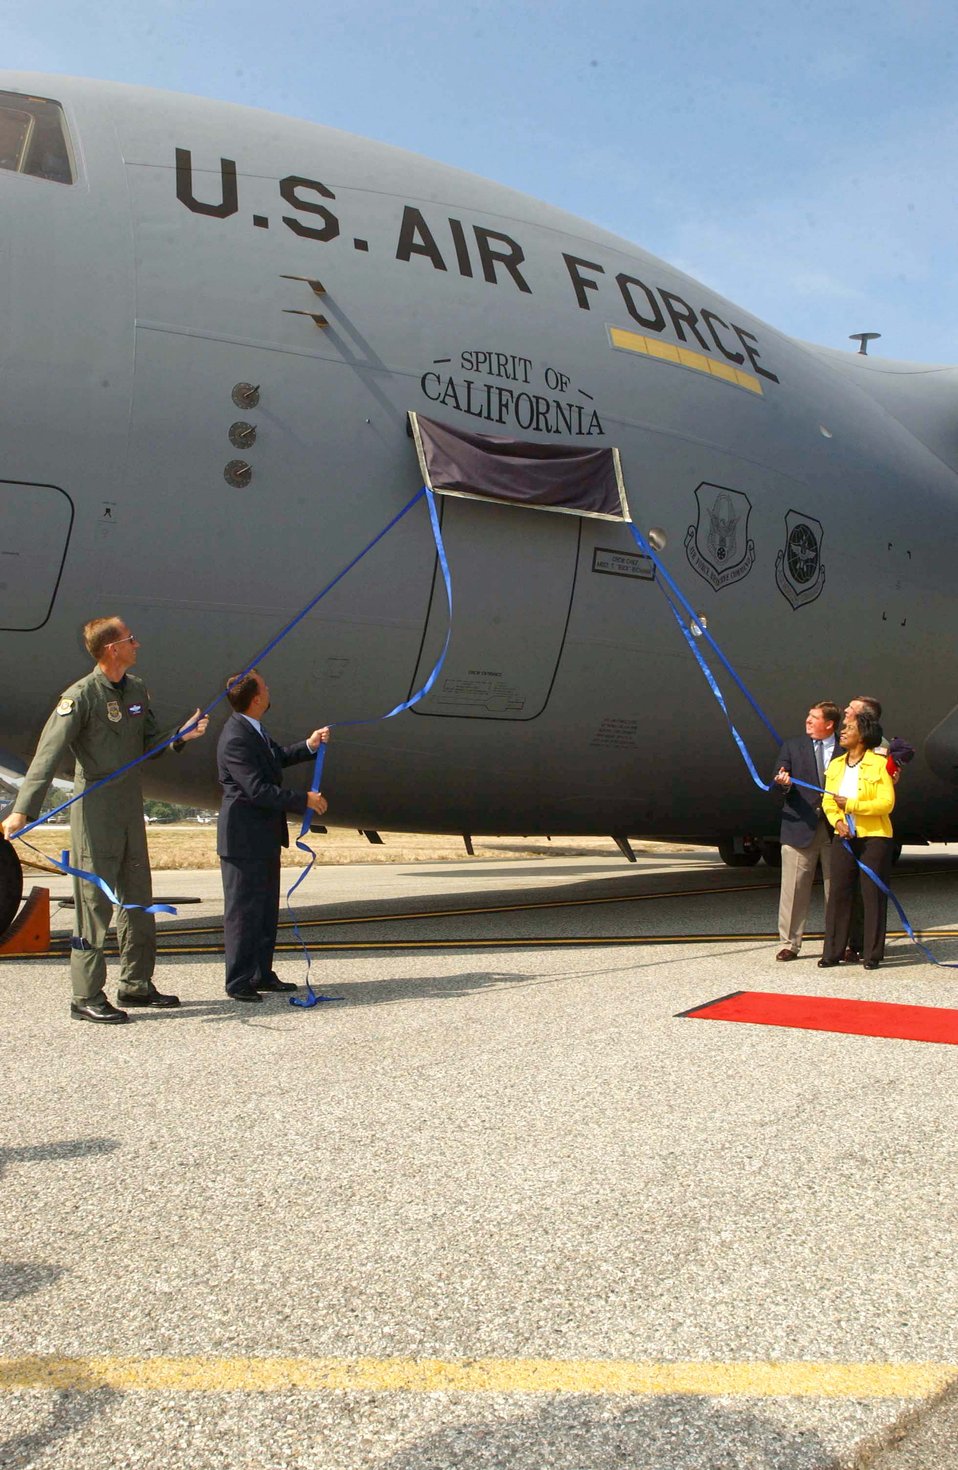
MARCH RECIEVES AFRC'S FIRST C-17

MARCH AIR RESERVE BASE, Calif. -- (From left) Brig. Gen. James Rubeor, Ron Marcott, Rep. Ken Calvert, Maj. Gen. Robert E. Duignan and Rep. Juanita Millender-McDonald unveil the